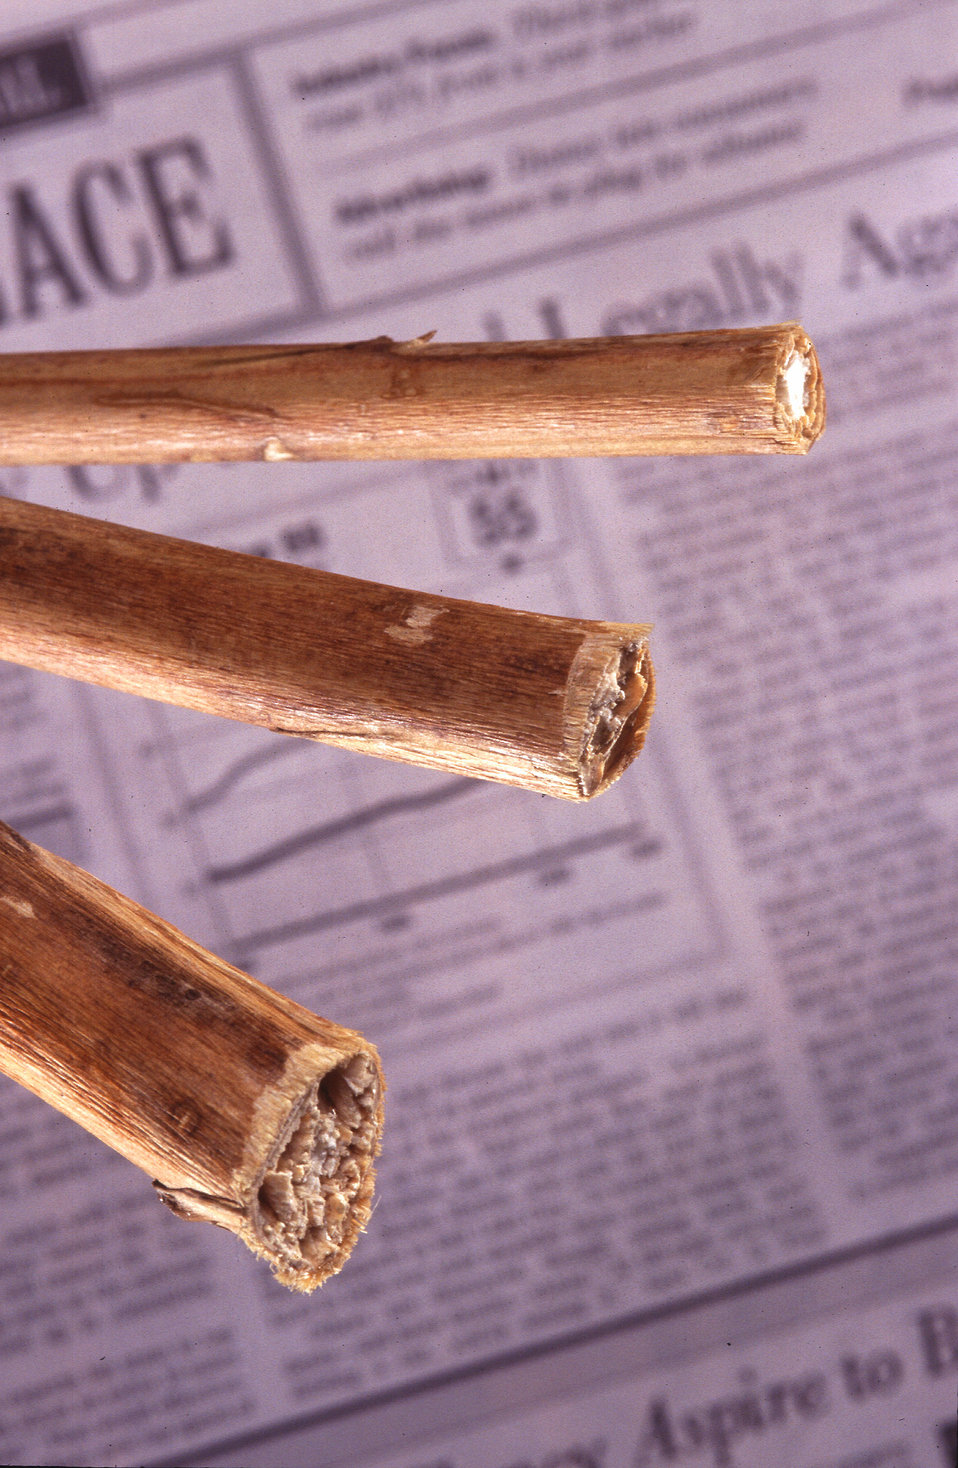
A fast-growing plant called kenaf promises to be an alternative to wood pulp for papermaking. Research dates back to 1956, when a team of U.S. Department of Agriculture’s (USDA) Agricultural Research Service (ARS) researchers singled out kenaf as a potential papermaking candidate. Today, through cooperative agreements with private firms, kenaf is poised to make the leap from the laboratory to full-scale production.